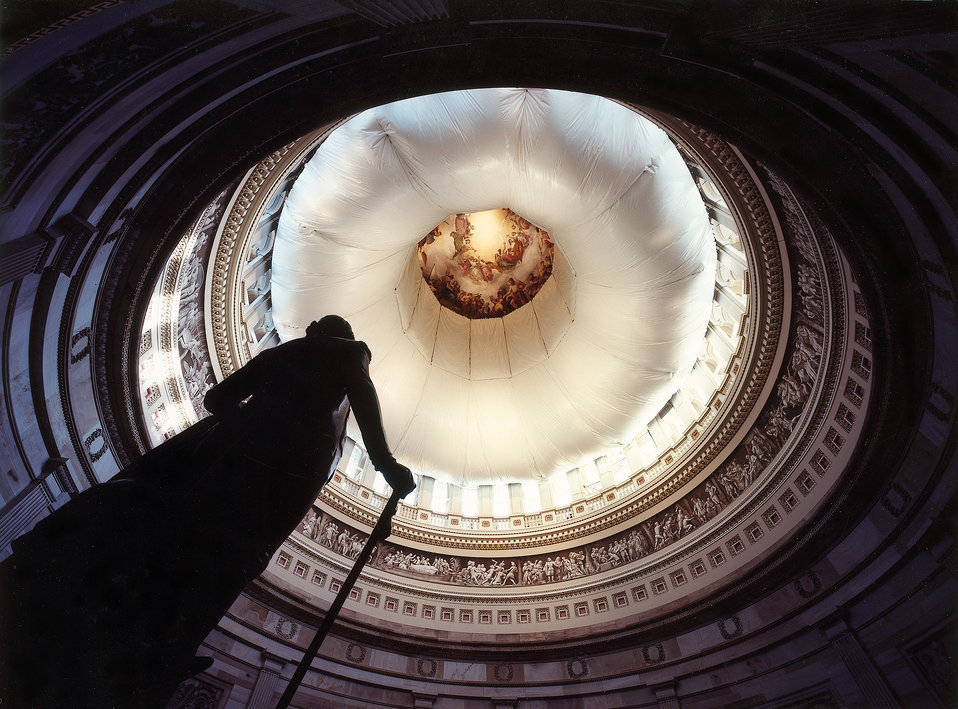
Safety Netting in Rotunda in 1999

In 1999, approximately 180,000 pounds of lead based paint was removed from the interstitial space (area between outer dome and inner dome) and was repainted with an epoxy paint. A custom scaffolding and safety netting solution was design to suspend the scaffolding above the Rotunda floor to minimize disruption.